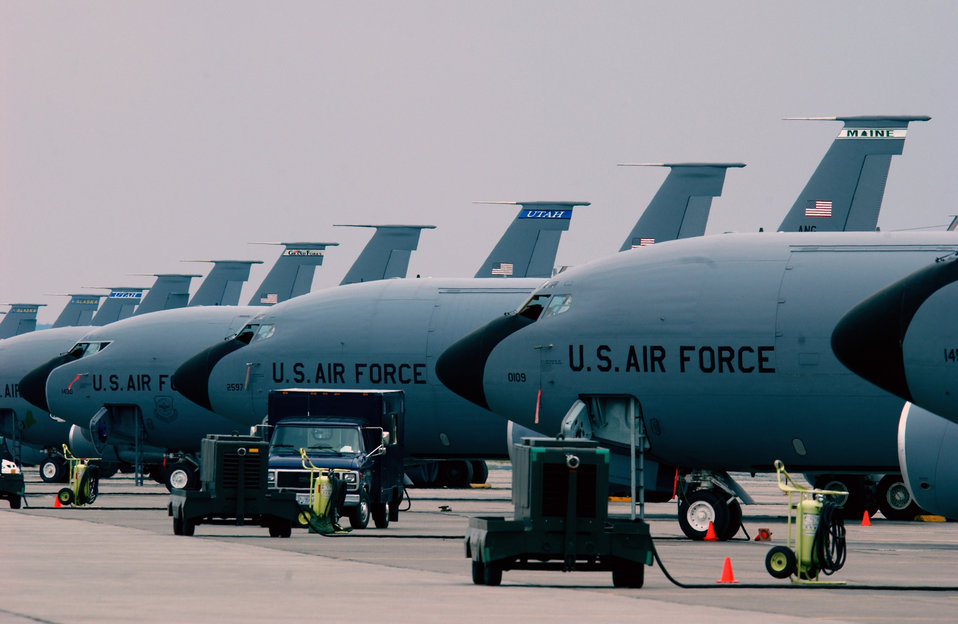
Tanker Task Force keeps Northern Edge flying

KC-135 Stratotankers from various units are at Eielson Air Force Base, Alaska, for Exercise Northern Edge 2006, a joint training exercise. It is one of a series of U.S. Pacific Command exercises that prepare joint forces to respond to crises in the Asian Pacific region.